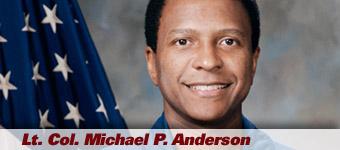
Lt. Col. Michael P. Anderson, NASA astronaut